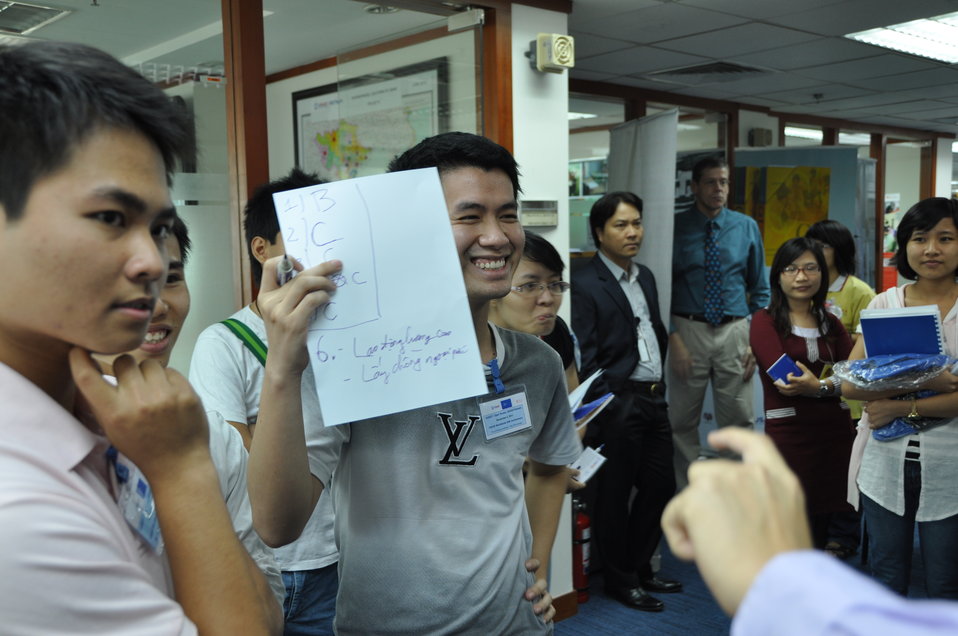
USAID 50th Anniversary Open House, USAID Vietnam